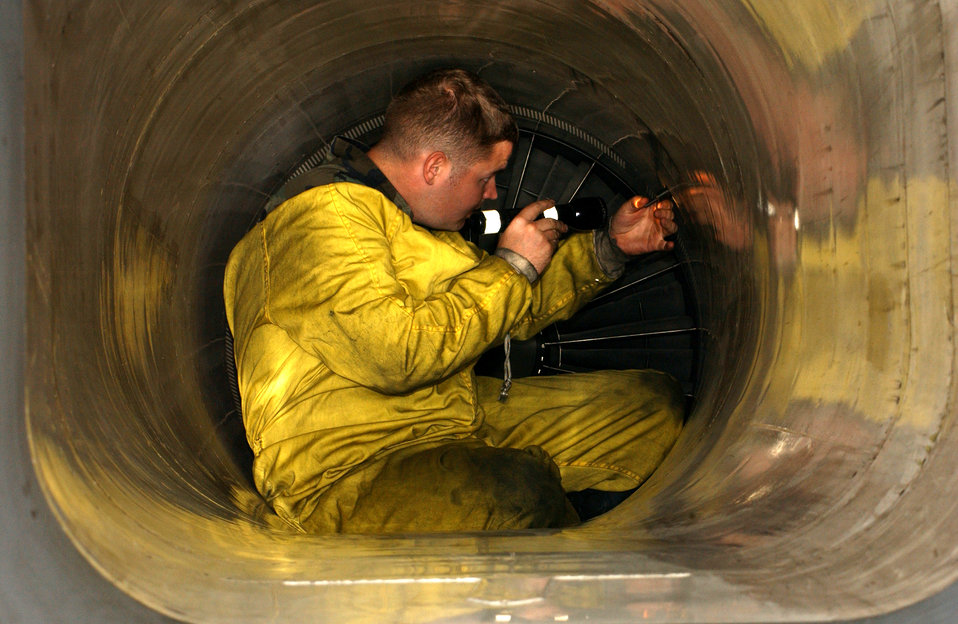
Eagle intake

KADENA AIR BASE, Japan -- Staff Sgt. Andrew Clarey performs a post-flight inspection of an F-15 Eagle intake and looks for any possible damage following an exercise training mission here Feb. 16. Sergeant Clarey is crew chief with 18th Air Maintenance Squadron.